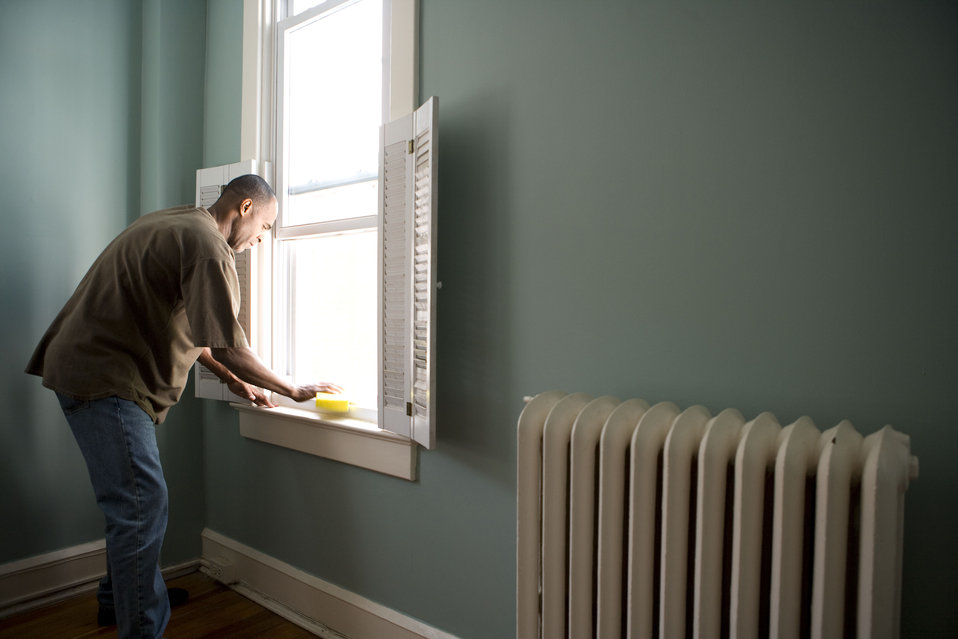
When renovating a home, you should use a damp sponge or cloth to clean dust collected on a window sill, as the dust may contain asbestos or lead-based paint. Home maintenance is an ongoing process for any homeowner, and here we see an African-American man as he was preparing a window in his home for a general cleaning.